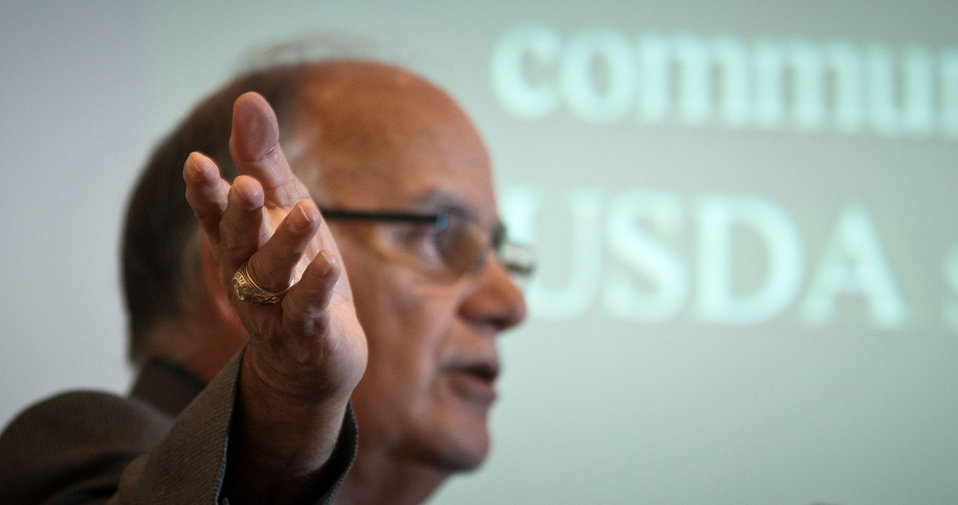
Texas/Mexico Border Coalition Chairman Omar Garza speaks about Identification of the Risks Faced By, the Needs of, and the Role of Non-governmental Organizations (NGOs) to Small and Disadvantaged Farmers, during the U.S. Department of Agriculture (USDA) 2013 Agricultural Outlook Forum held at the Crystal Gateway Marriott Hotel in Arlington, VA on Friday, Feb. 22, 2013. The breakout session’s general topic of Risk Management for Small and Socially Disadvantaged Farmers provides a profile of small and disadvantaged farmers based on information from the recent Census of Agriculture in order to identify the size and current economic and demographic trends of these farmers. The discussion also identified the risks for these farmers, the need to manage those risks for longer-term viability/sustainability, the role of the public sector, and the resources available for small and disadvantaged farmers in coping with risk.